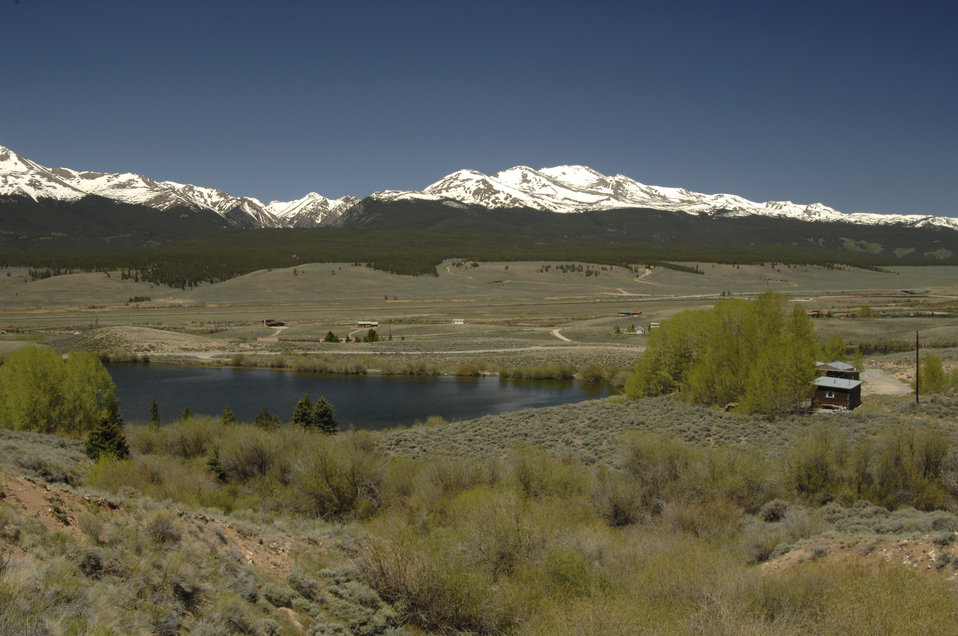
The Collegiate Peaks in the San Isabel and Gunnison National Forests, Colorado on June 12, 2012.